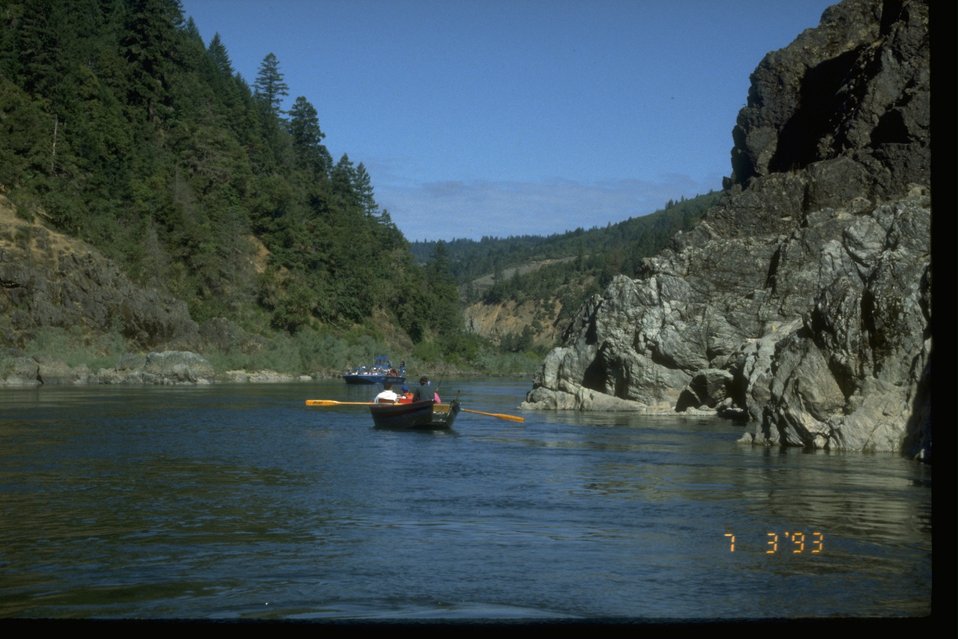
Drift boats in Zig Zag Creek.